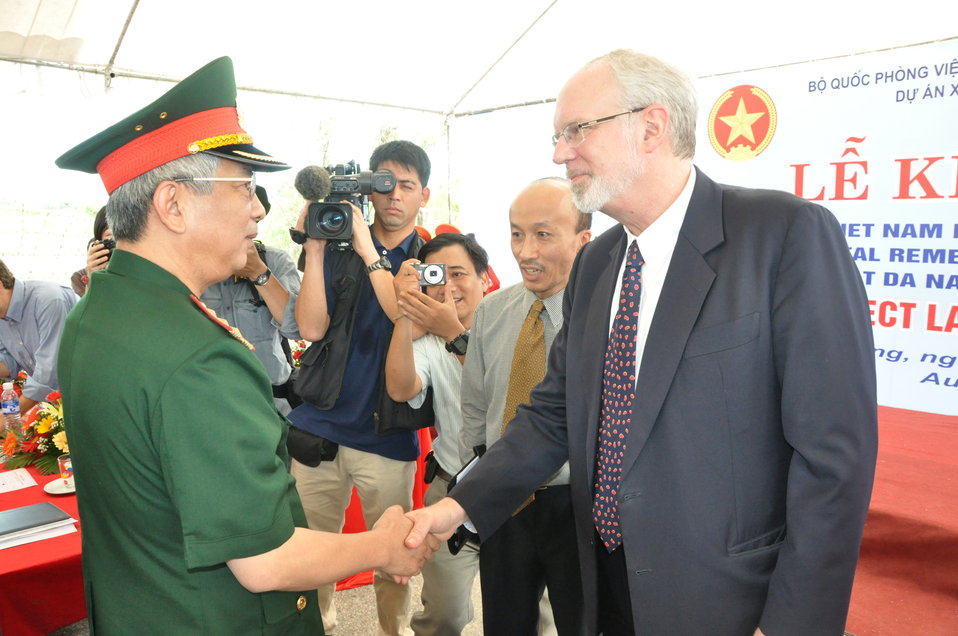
Lt. Gen. Nguyen Chi Vinh, Vice Minister of National Defense, greets U.S. Ambassador David B. Shear at the Environmental Remediation of Dioxin Contamination at Danang Airport Project Launch

Danang, August 9, 2012